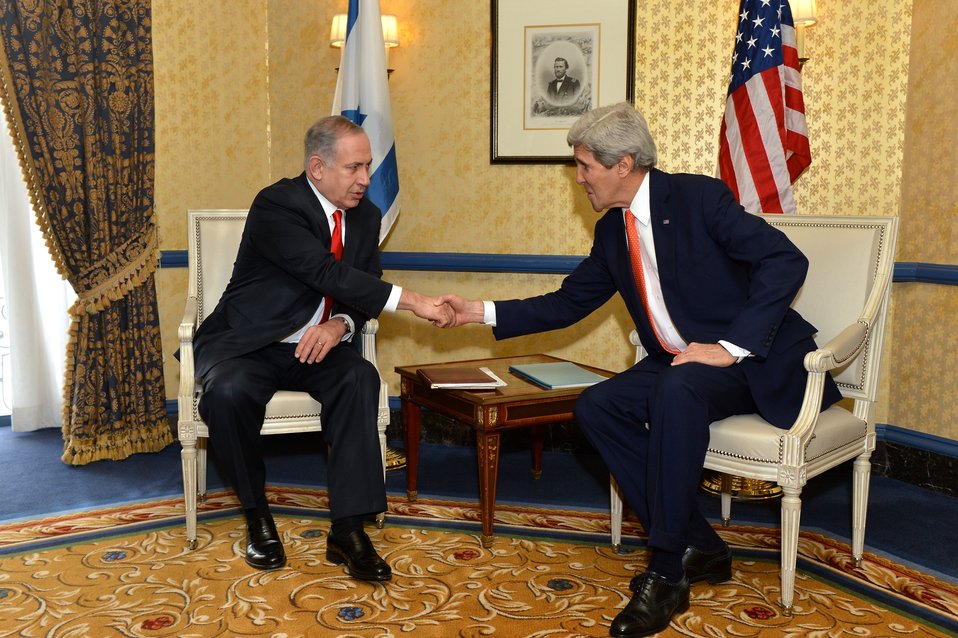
Secretary Kerry Meets With Israeli Prime Minister Netanyahu

U.S. Secretary of State John Kerry shakes hands with Israeli Prime Minister Benjamin Netanyahu in Washington, D.C., on March 3, 2014.